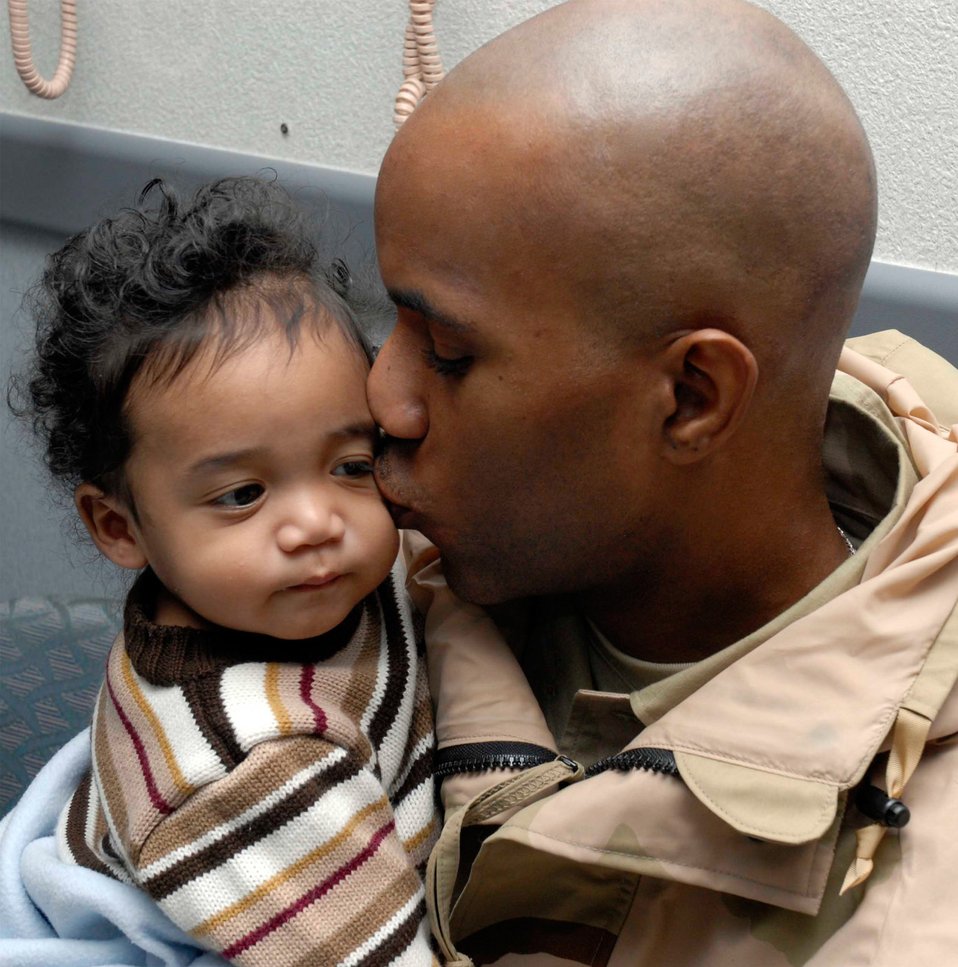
Single-parent dads deal positively with deployment

Senior Airman Brian Miles kisses his son, Brian, before his deployment recently. Airman Miles' son is 10 months old. Airman Miles is assigned to the 510th Expeditionary Fighter Squadron at Balad Air Base, Iraq. He's deployed from the 18th Communications Squadron at Kadena AB, Japan.